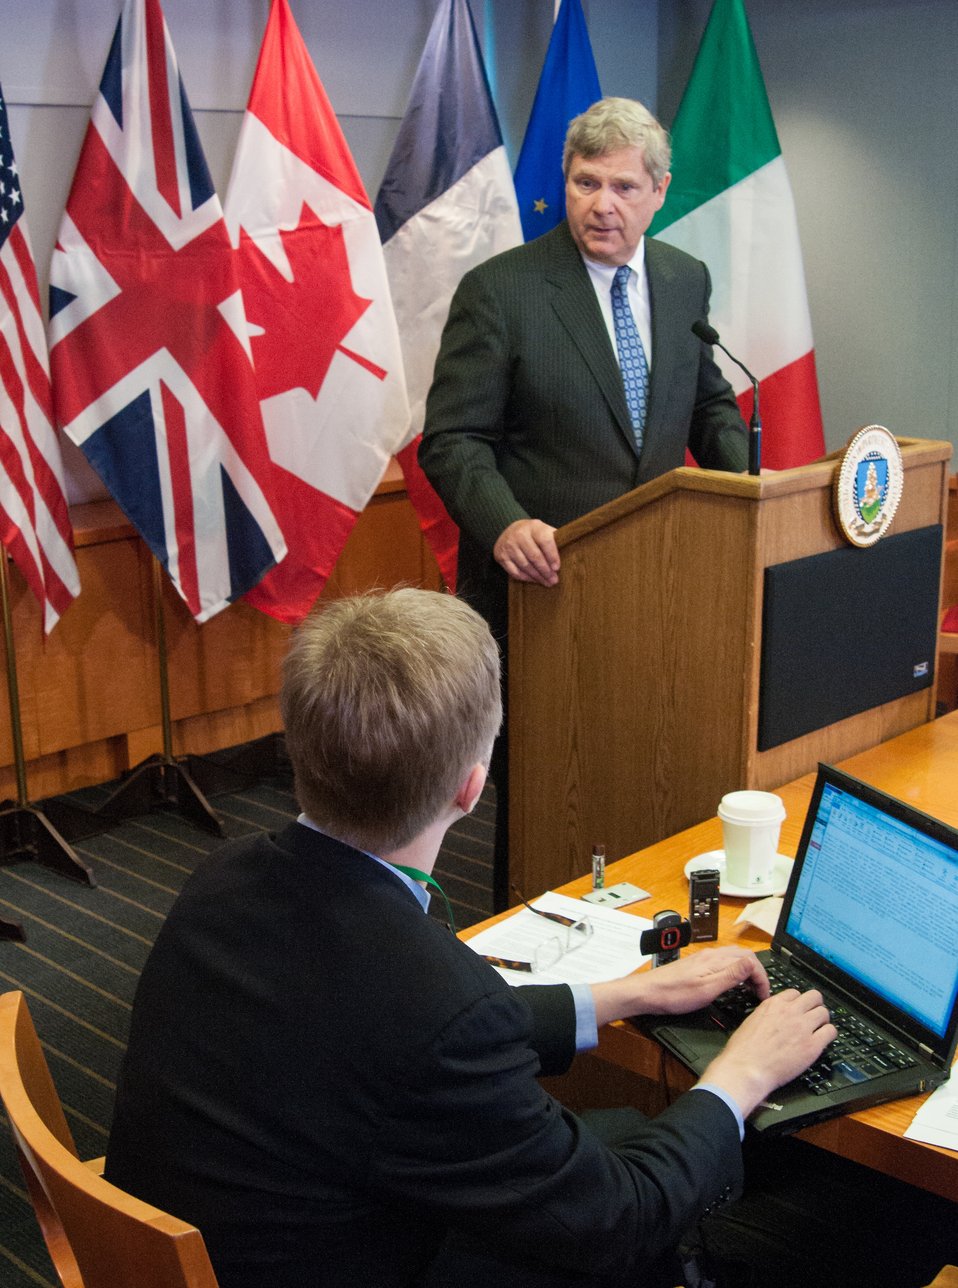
Agriculture Secretary Tom Vilsack held a press conference after giving the opening remarks at the G-8 International Conference on Open Data for Agriculture in Washington, D.C. on Monday, Apr. 29, 2013. The conference launched a new 'virtual community' of Food, Agriculture, and Rural data on Data.gov-the U.S. Government's data sharing website-to catalogue America's publicly available agricultural data and increase the ability of the public to find, download, and use datasets that are generated and held by the Federal Government. The data community features a collection of more than 300 newly cataloged datasets, databases, and raw data sources related to food, agriculture, and rural issues from agencies across the U.S. Government. In addition to the data catalog, the virtual community shares a number of applications, maps and tools designed to help farmers, scientists and policymakers improve global food security and nutrition.